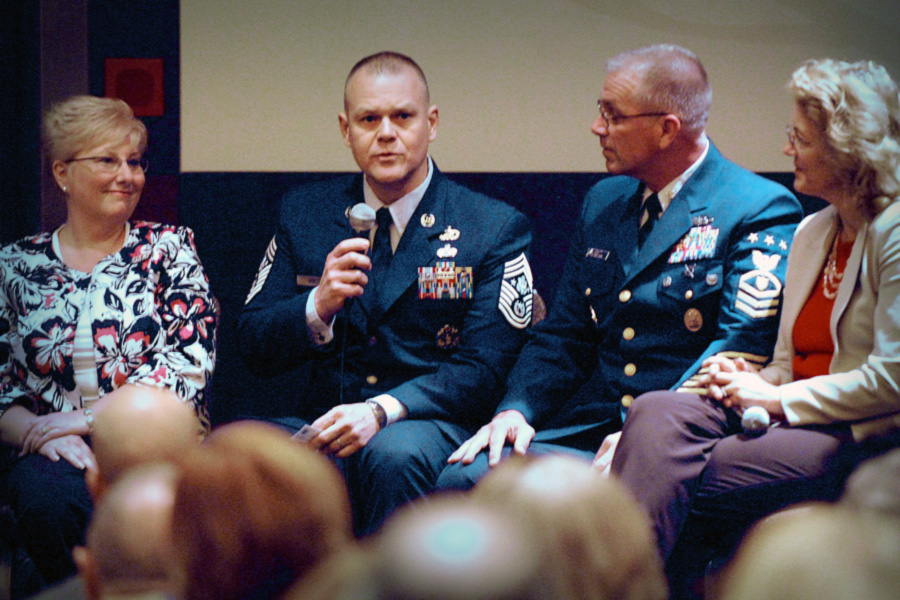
Top enlisted leaders focus on families

Chief Master Sgt. of the Air Force James A. Roy, with his wife, Paula, by his side, addresses an audience of family support professionals April 28, 2011, during a senior enlisted advisor town hall meeting at the 2011 Family Resilience Conference in Chicago. To his right are Master Chief Petty Officer of the Coast Guard Michael P. Leavitt and his wife, Debbie.